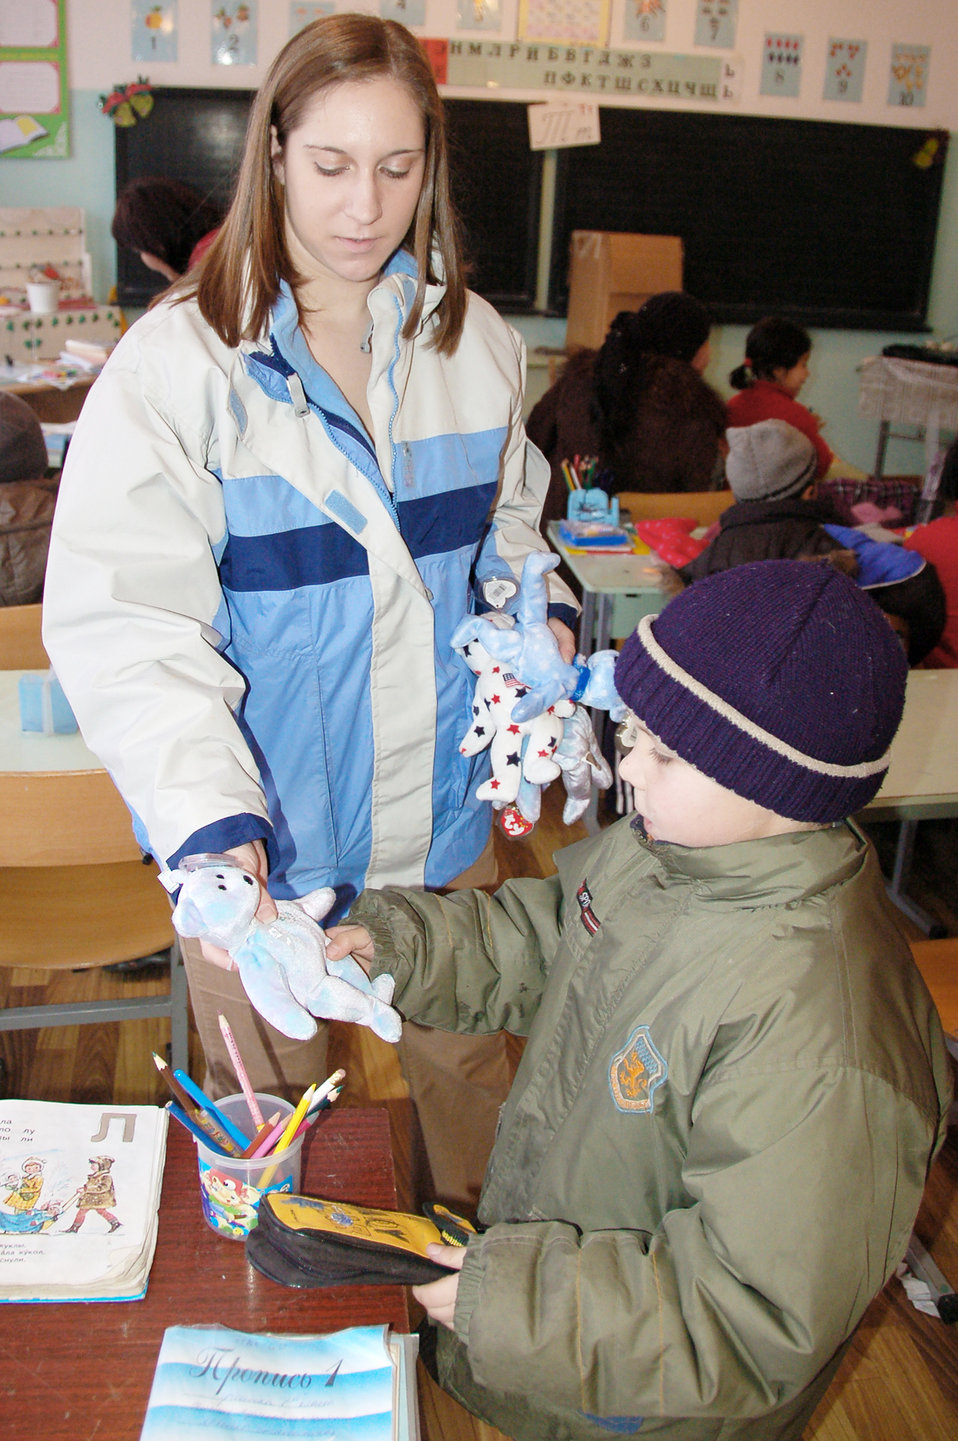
Airmen distribute donations to orphanage in Kyrgyzstan

Senior Airman Amy Poch hands a teddy bear to a Nizhanchuisk Orphanage and School student during a visit in December. Airmen from the Transit Center at Manas, Kyrgyzstan delivered over 50 donated boxes of clothes, toys and necessities from the U.S., to the orphanage. Airman Poch is a 376th Expeditionary Medical Group laboratory technician.